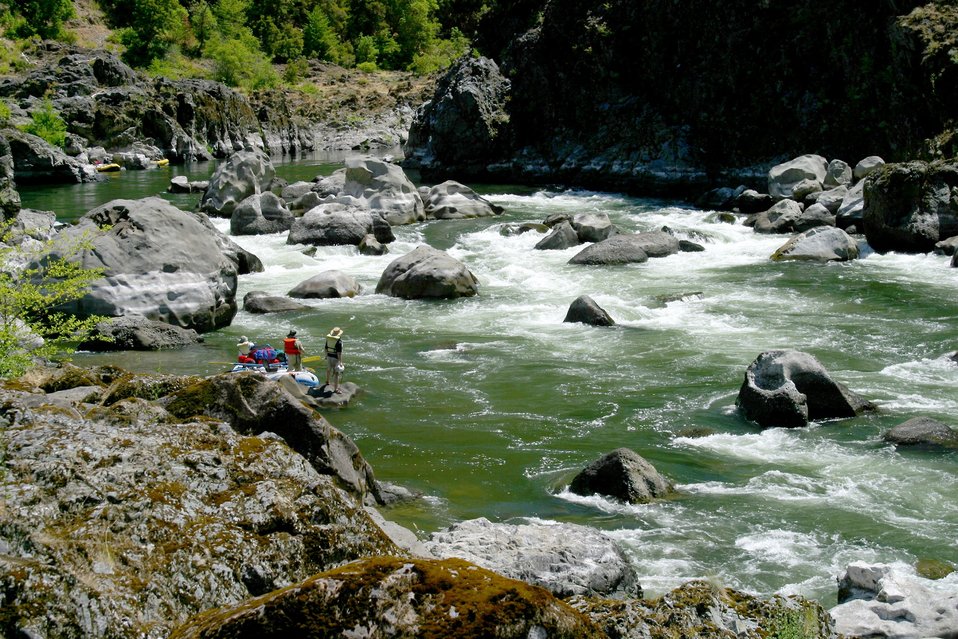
Blossom Rapids.